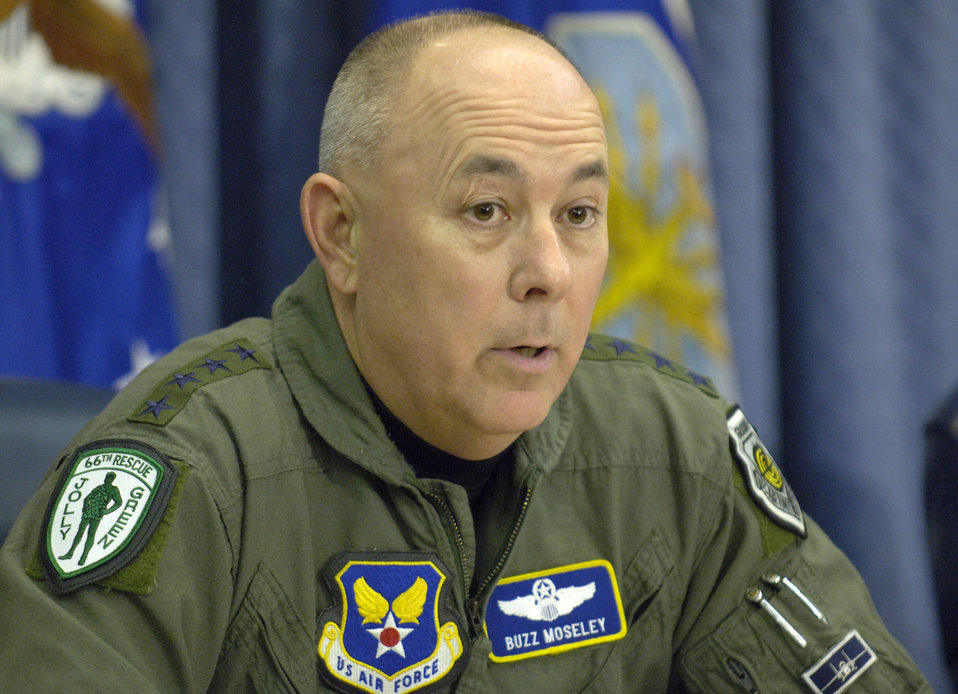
Senior Air Force leaders hold space summit

Air Force Chief of Staff Gen. T. Michael Moseley served as host for a space summit Sept. 7 at the Pentagon, where senior Air Force leaders discussed space missions and operations.